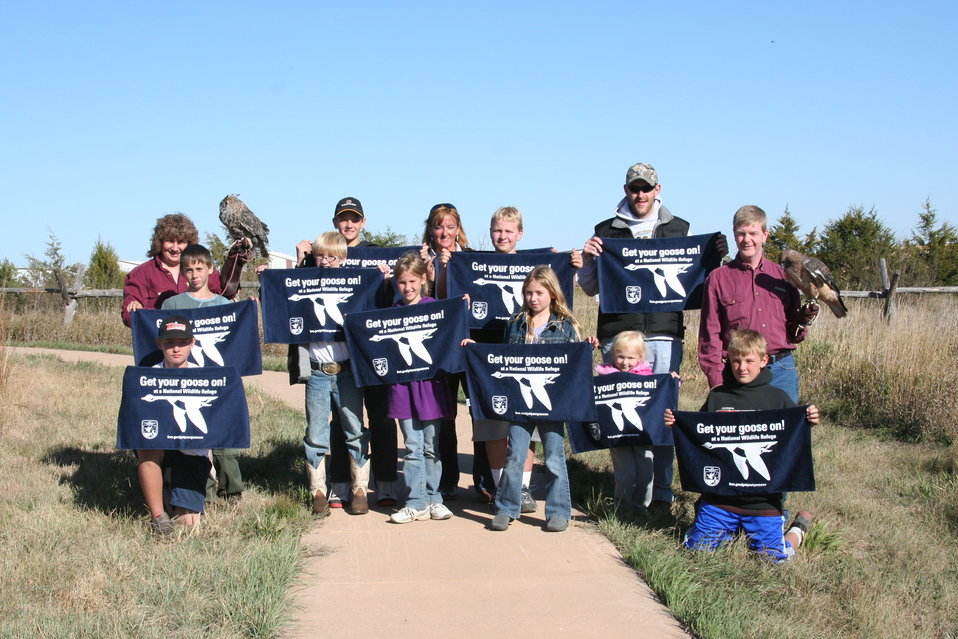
Get Your Goose On! - Raptor Style!

During Huron Wetland Management District's 2012 Prairie Festival, visitors were treated to an up close and personal look at various birds of prey.